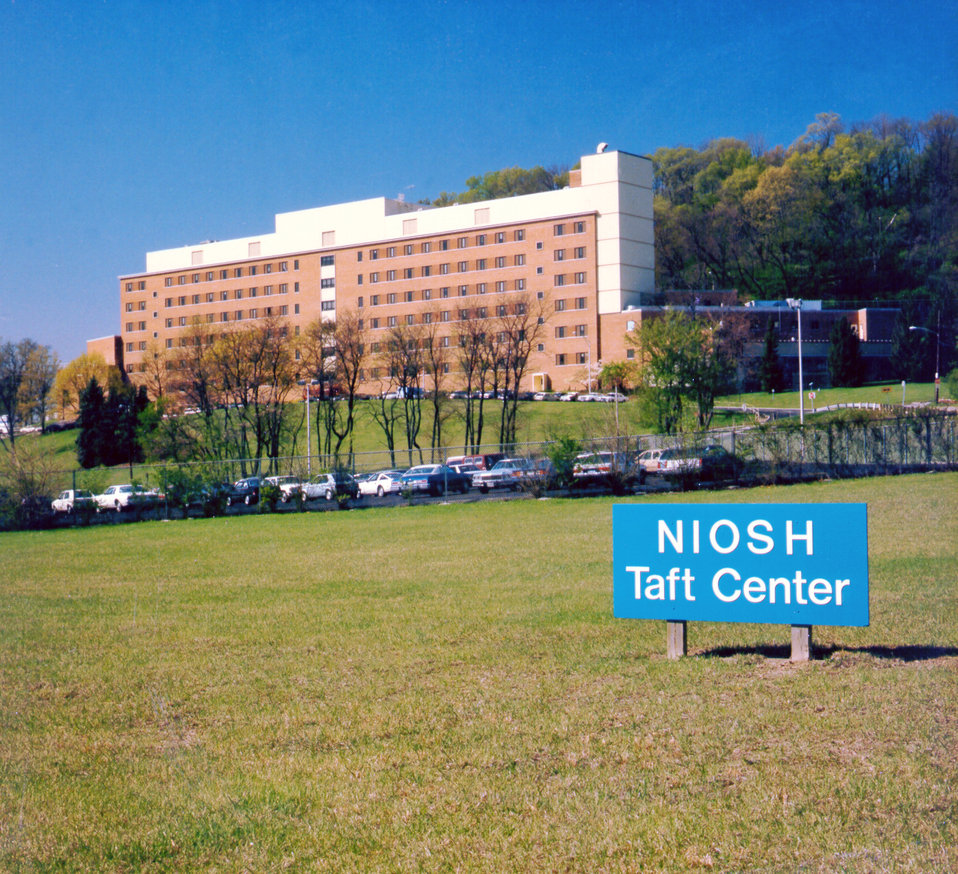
This is the Taft Research Center in Cincinnati, OH, which houses the National Institute for Occupational Safety and Health.